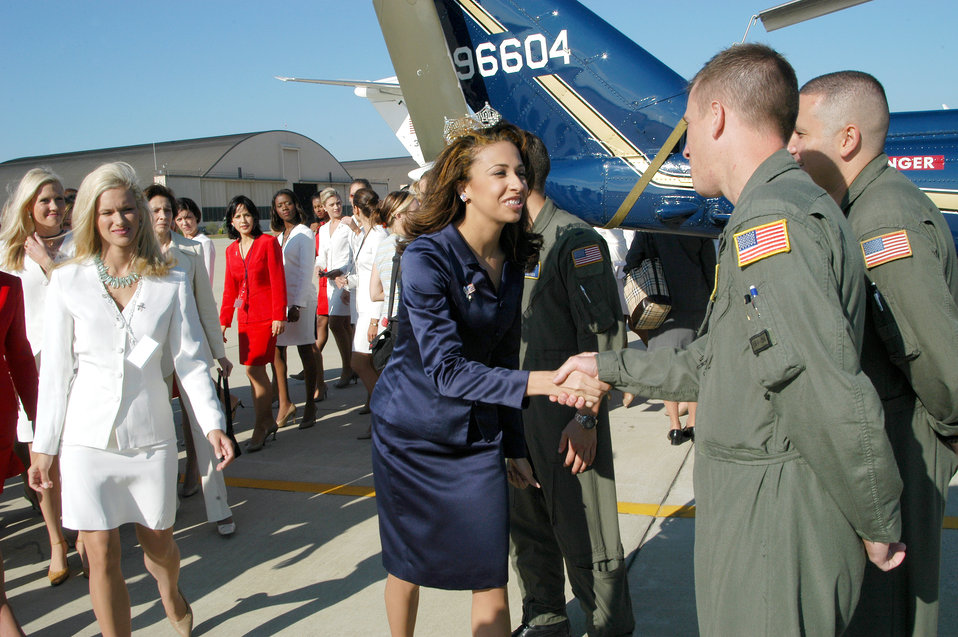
Miss America 2003

ANDREWS AIR FORCE BASE, Md. -- Erika Harold, Miss America 2003, shakes hands with airmen here during a visit Sept. 5. Harold and 51 Miss America contestants visited the base as part of their tribute to America's armed forces.